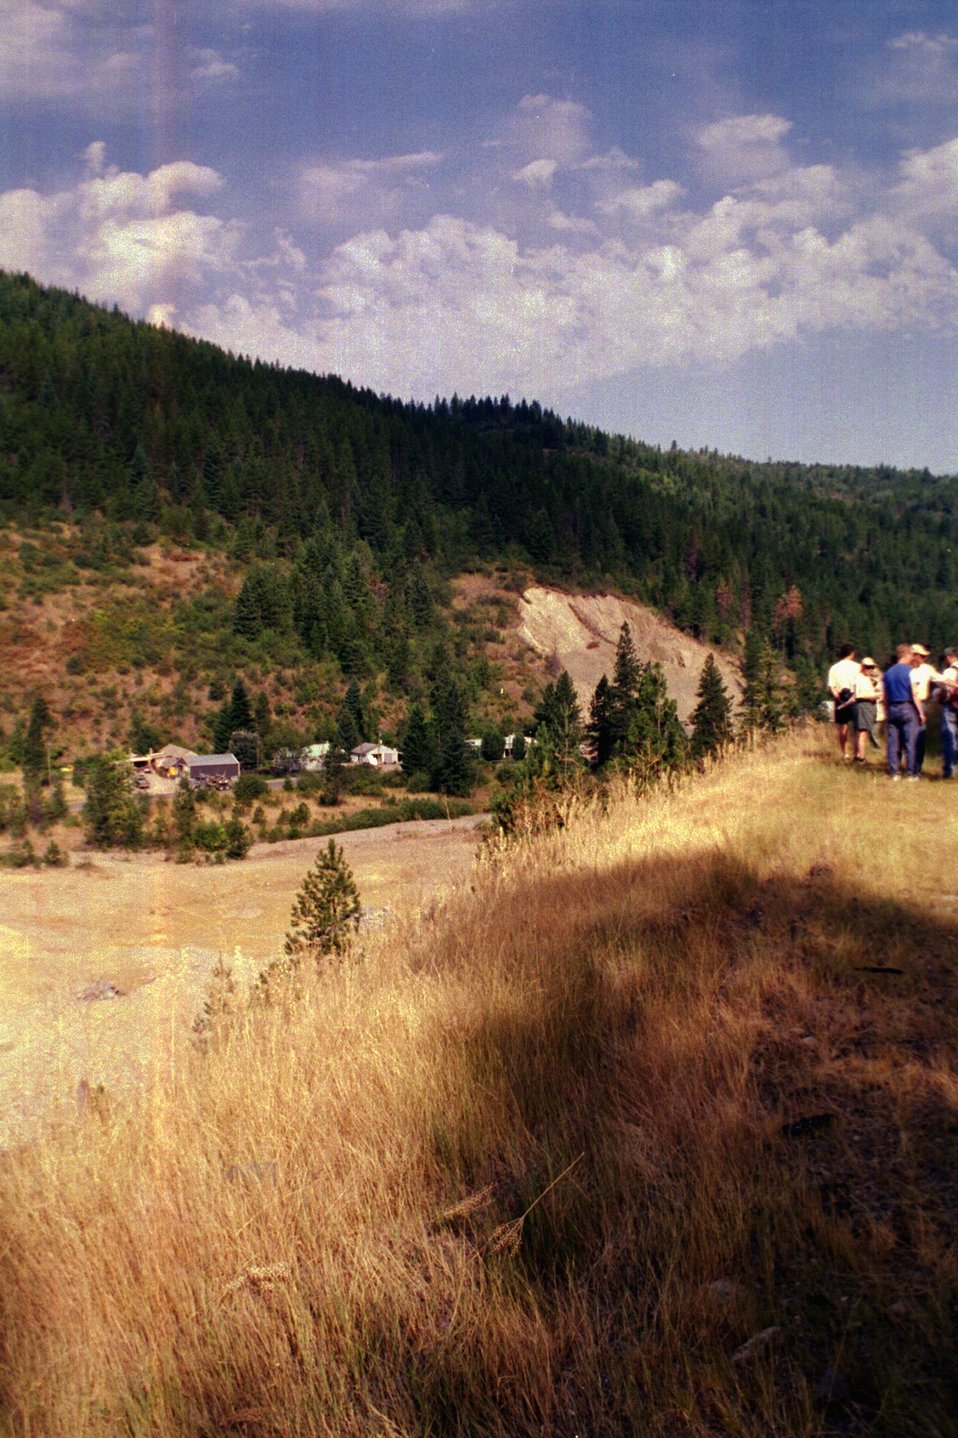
Riparian Area Stream Restoration from mining damage near Pinecreek Couer D'Alene Field Office UCSC Upper Columbia Salmon Clearwater District